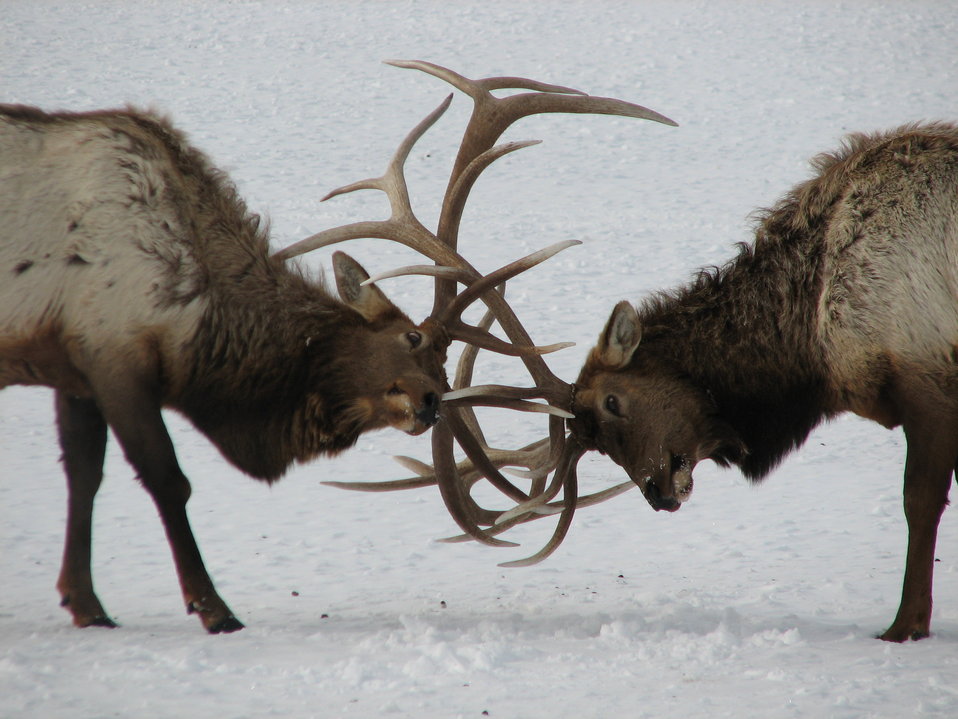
Two Bulls Clash Antlers

Though bulls most actively display dominance during the fall rut, they can frequently be seen clashing antlers with rival males during the winter.